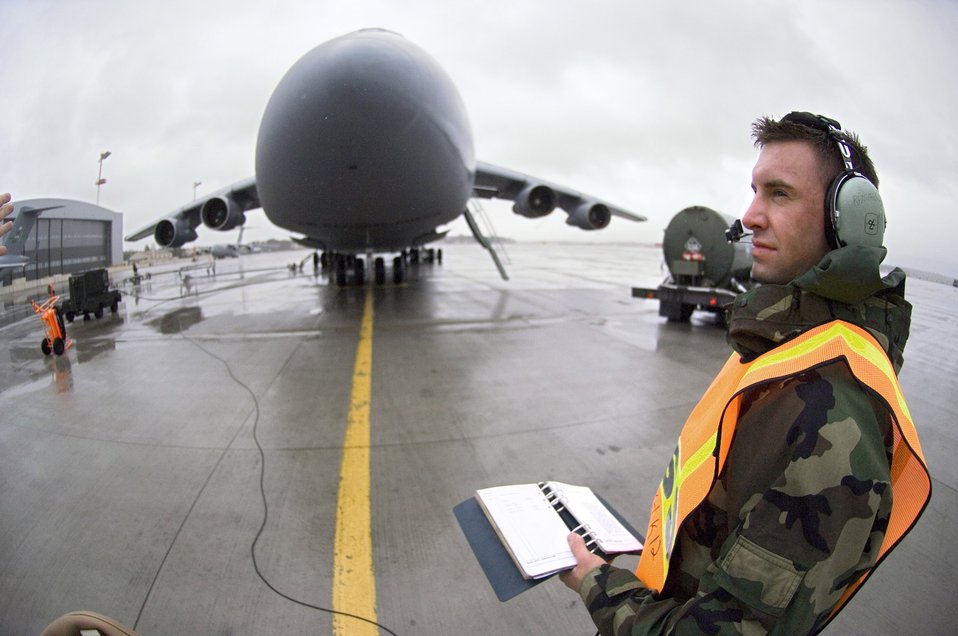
Ramstein airlift mission at full speed

Staff Sgt. Daniel Wienfurter checks that the fuel is balanced as itUs pumped into a C-5 Galaxy at Ramstein Air Base, Germany, on Thursday, March 30, 2006. Sergeant Wienfurter, of Aurora, Wisc., is a crew chief with the 723rd Aircraft Maintenance Unit.